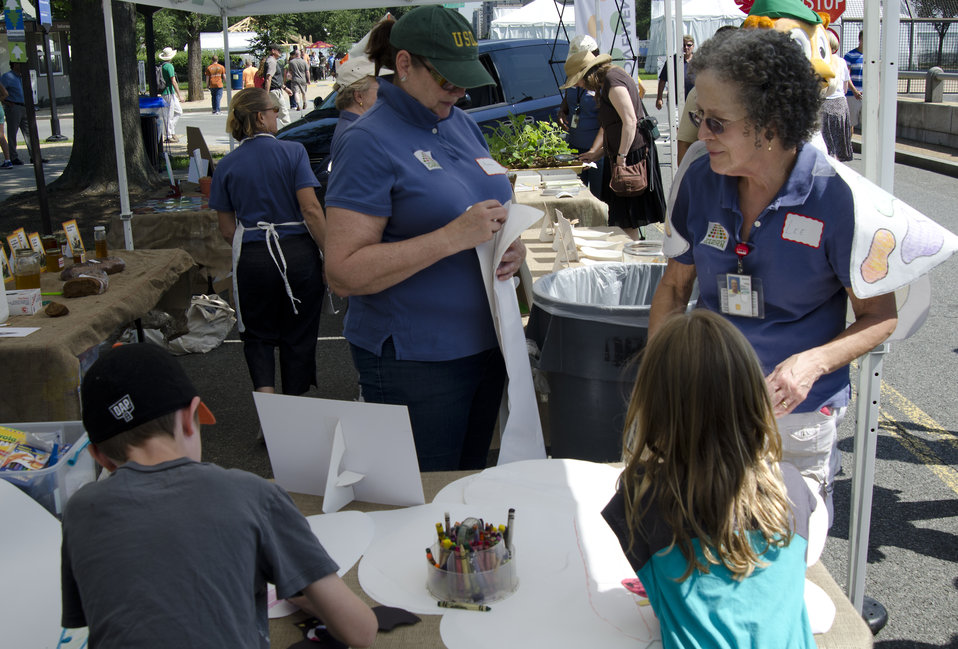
Peoples Garden Pollinator Display at the U.S. Department of Agriculture in Washington, DC, on Friday, June 21, 2013.